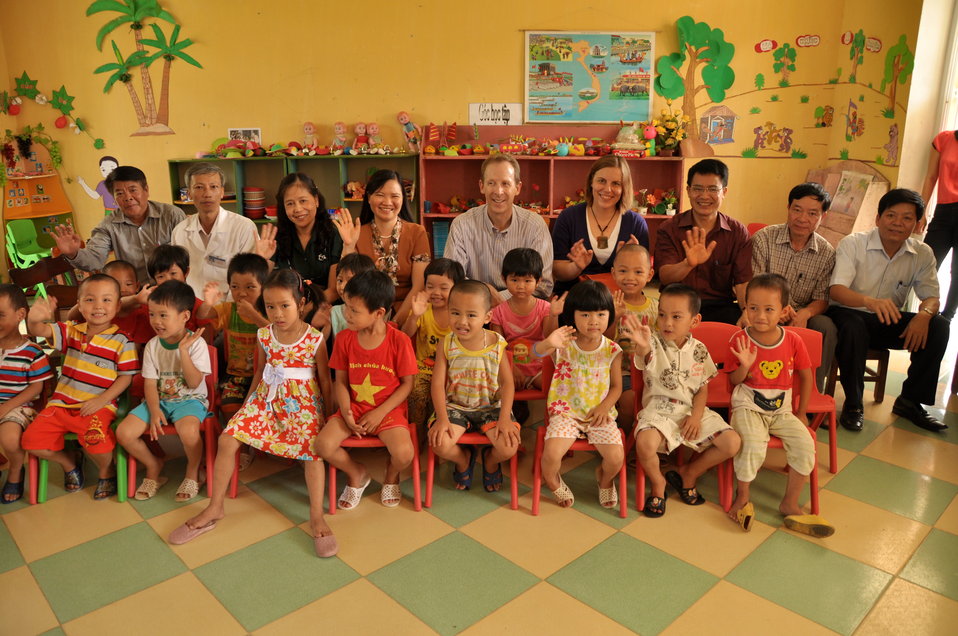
USAID Delivers Deworming Medication to Kindergartners in Nam Dinh Province

Children of Vietnam's Nam Dinh Province receive deworming medicine in a program supported by USAID and World Vision Australia.
June 1, 2013